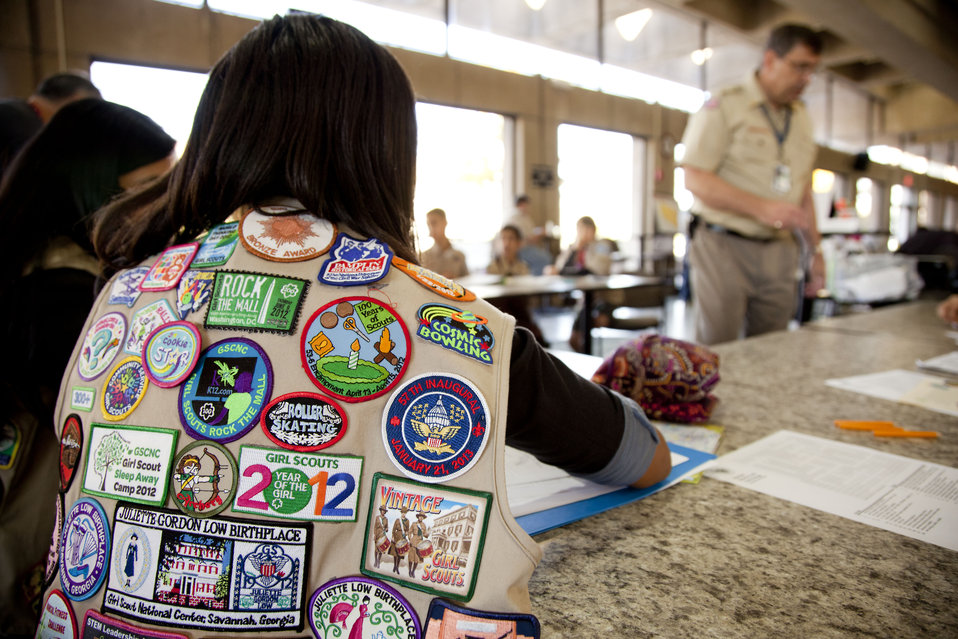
A Girl Scout works on building an electroscope as part of the nuclear science class.